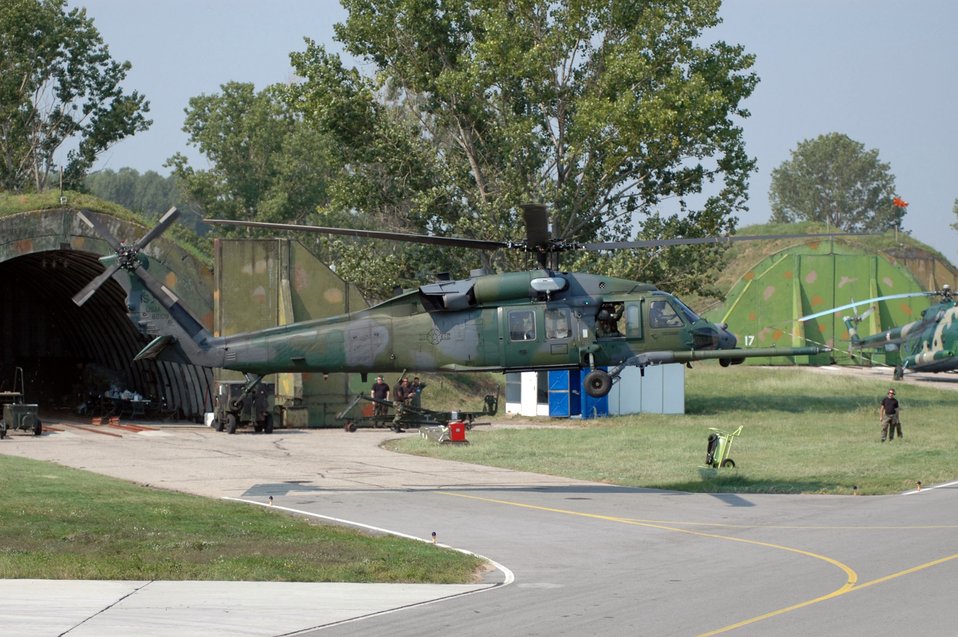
Rescue squad brings experience to Cooperative Key

PLOVDIV, Bulgaria -- An HH-60G Pave Hawk returns from flying a mission during exercise Cooperation Key 05. About 50 56th Rescue Squadron Airmen from Naval Air Station Keflavik, Iceland, are here for the multinational exercise designed to enhance the interoperability of NATO and partner nation air forces through cooperation and familiarization of the organization's procedures.